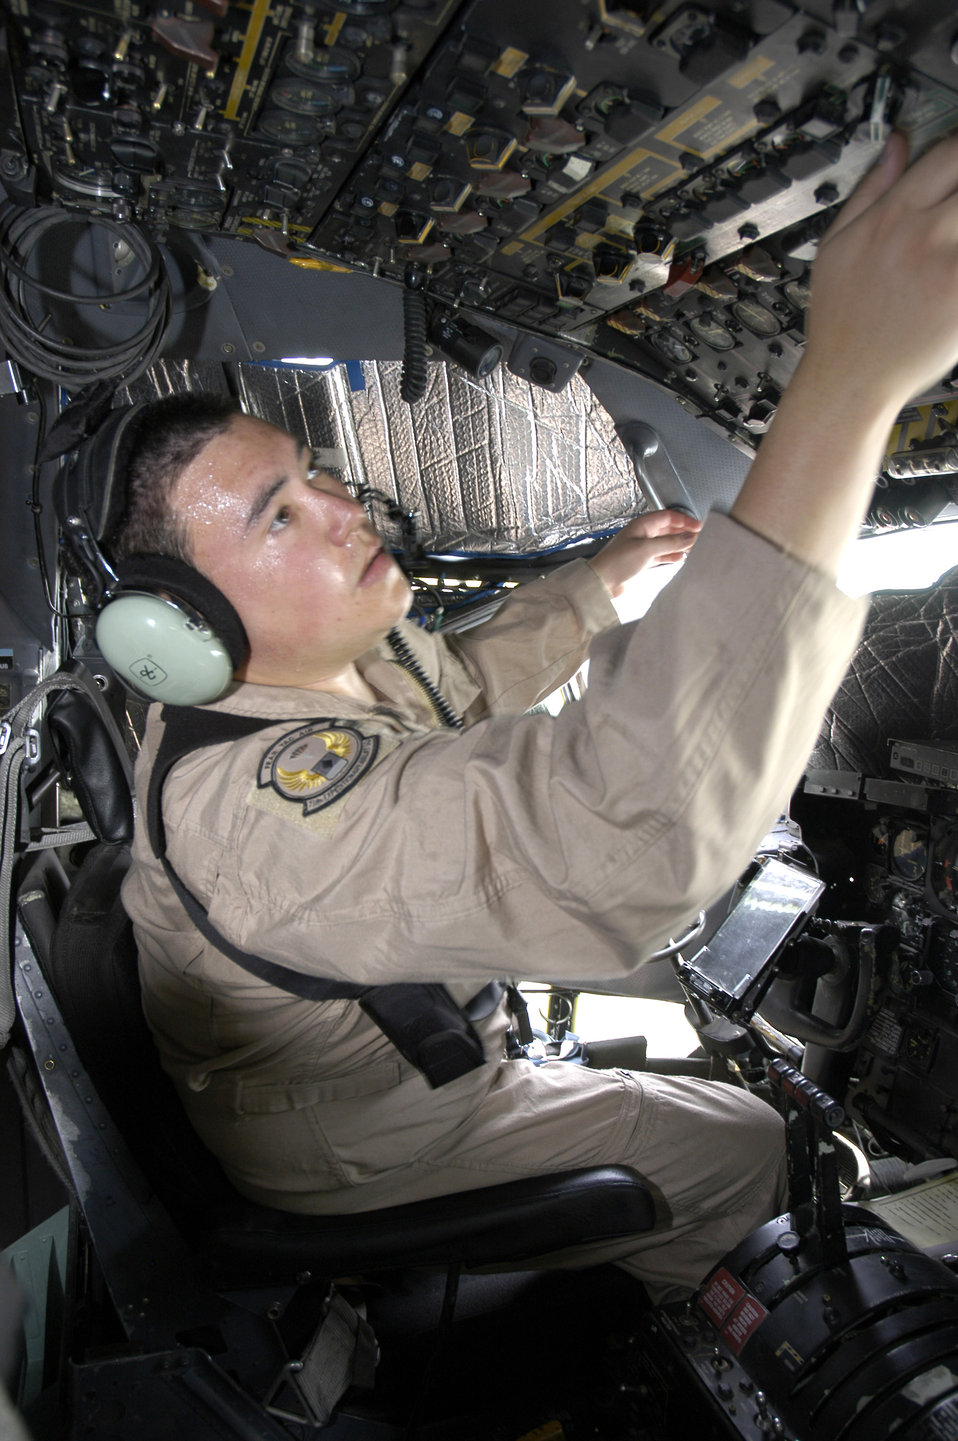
Airlift support

Staff Sgt. Patrick Bowling performs pre-flight checks at a forward operating base in Southwest Asia Aug. 23. Sergeant Bowling is a flight engineer with the 738th Expeditionary Airlift Squadron, which is part of the 386th Air Expeditionary Wing. The wing is the primary aerial hub for Operation Iraqi Freedom and provides airlift support for Operation Enduring Freedom and the Horn of Africa.